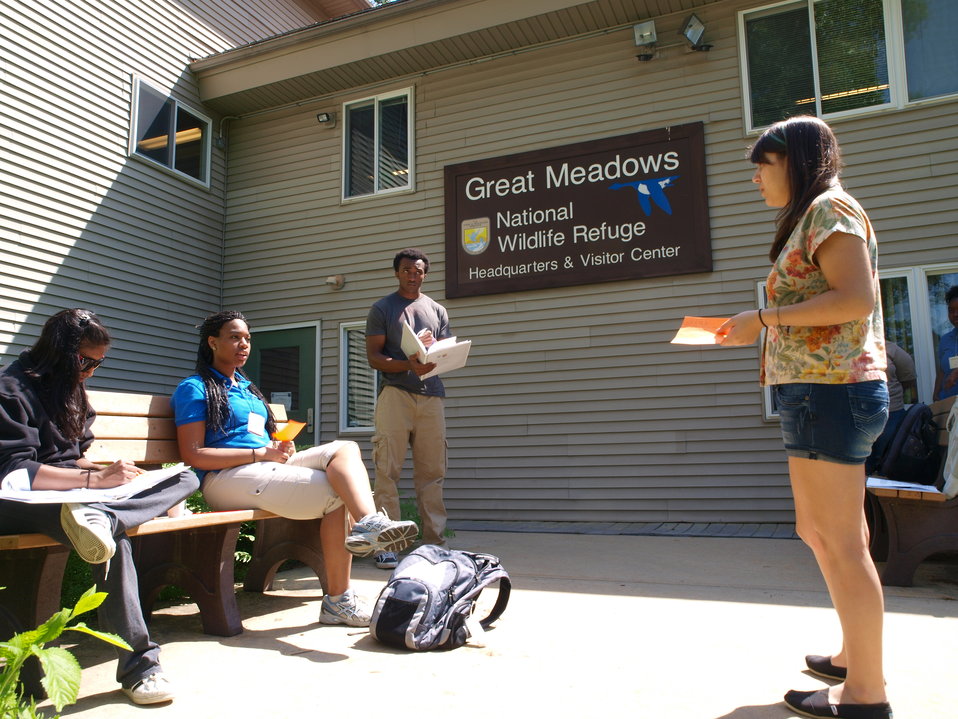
Challenge Project with Chivia's group

Chivia's mentees prepare for their Challenge Project presentation.